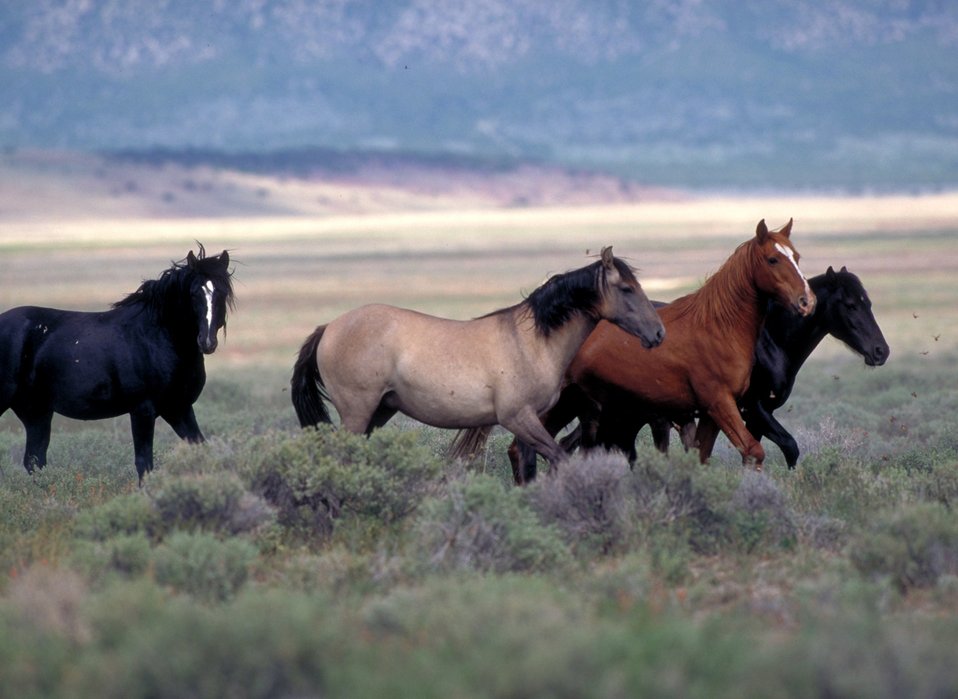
Onaqui Herd near Dugway, Utah.